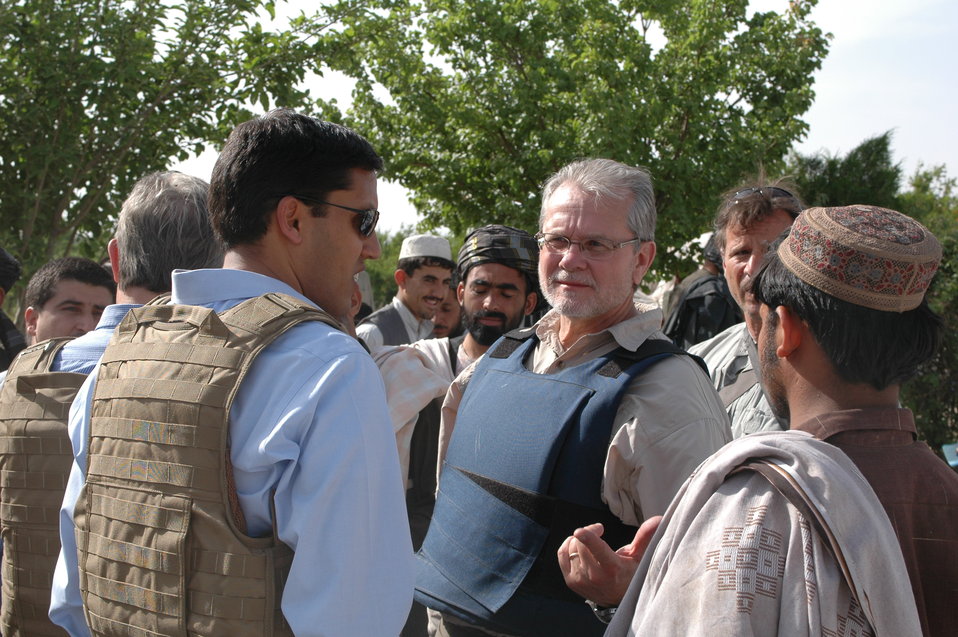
Dr Shah Visits Argandab April 10, 2010